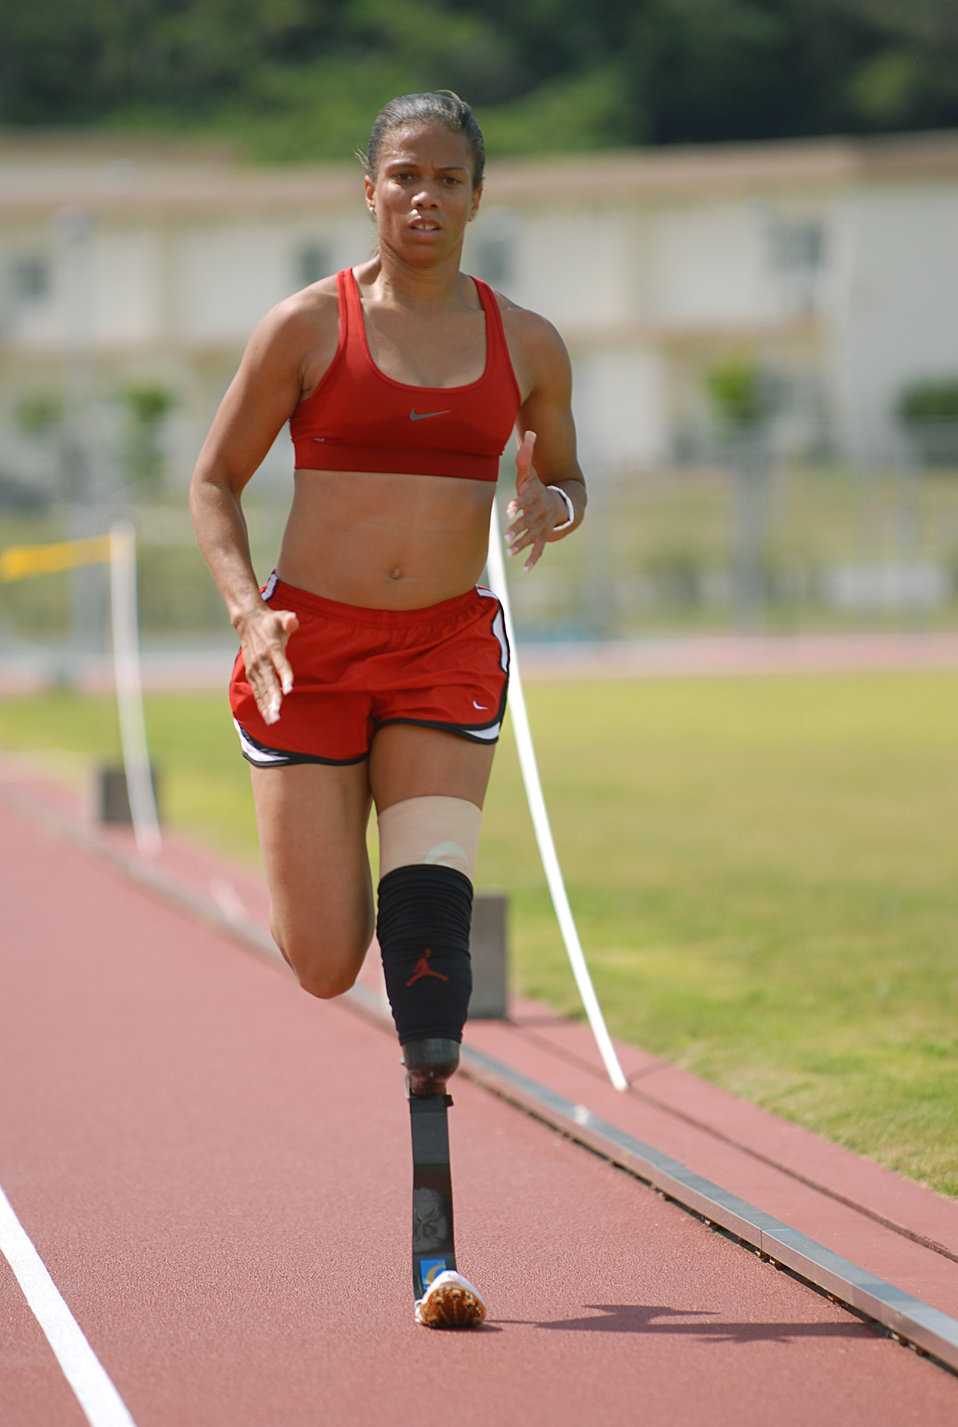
Paralympic athletes train at Kadena

Paralympian April Holmes of Chula Vista, Calif., runs laps Aug. 26 at Ryukyu Middle School on Kadena Air Base, Japan. Holmes is the world record holder in the 100-, 200- and 400-meter dashes. More than 100 athletes and support staff from the U.S. Paralympics track and field and swim teams arrived on Kadena AB Aug. 24 to live and train for the next ten days in preparation for the 2008 Paralympic Games being held in Beijing, China, Sept. 6.